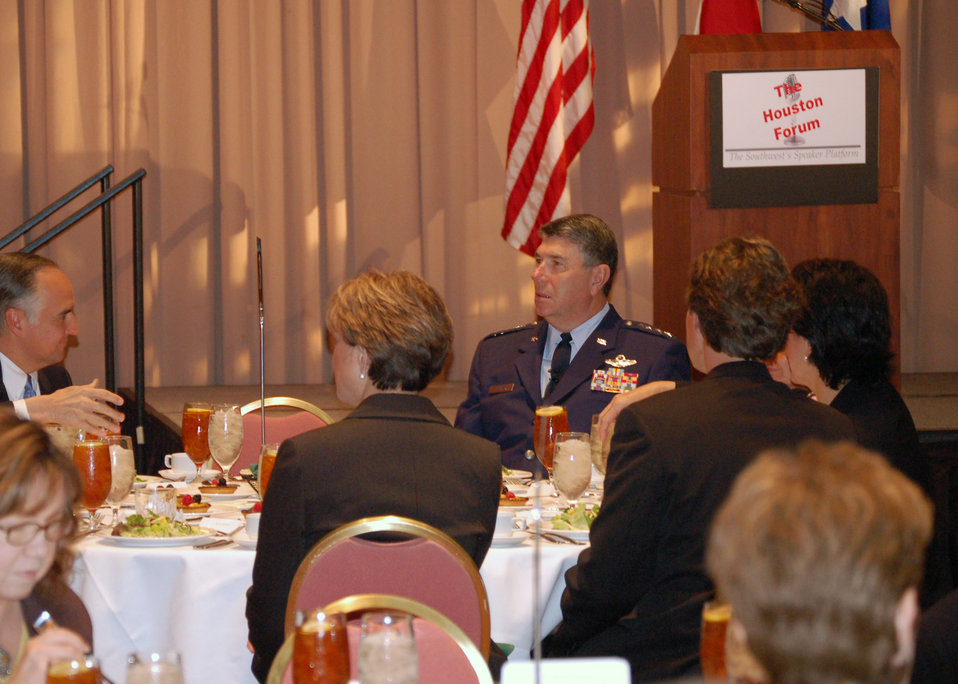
Road Show

General Paul V. Hester, Pacific Air Forces commander, enjoys some lunchtime conversation with Houston Forum members at a JW Marriott hotel auditorium. Dec. 7. The Houston Forum is an organization that provides a community platform for distinguished speakers in the nation's fourth largest city. General Hester was in town for the